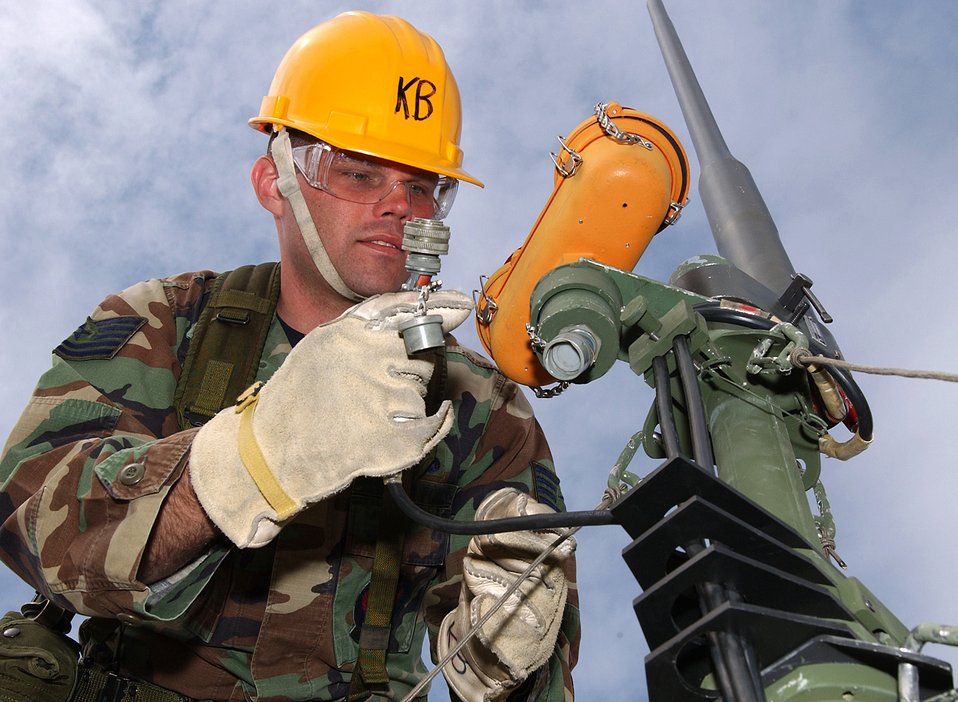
The set up

MCENTIRE AIR NATIONAL GUARD STATION, S.C. -- Tech. Sgt. Ken Bass helps assemble a mobile tower here April 1 during a field exercise. Sergeant Bass is a member of the South Carolina Air National Guard's 245th Air Traffic Control Squadron.